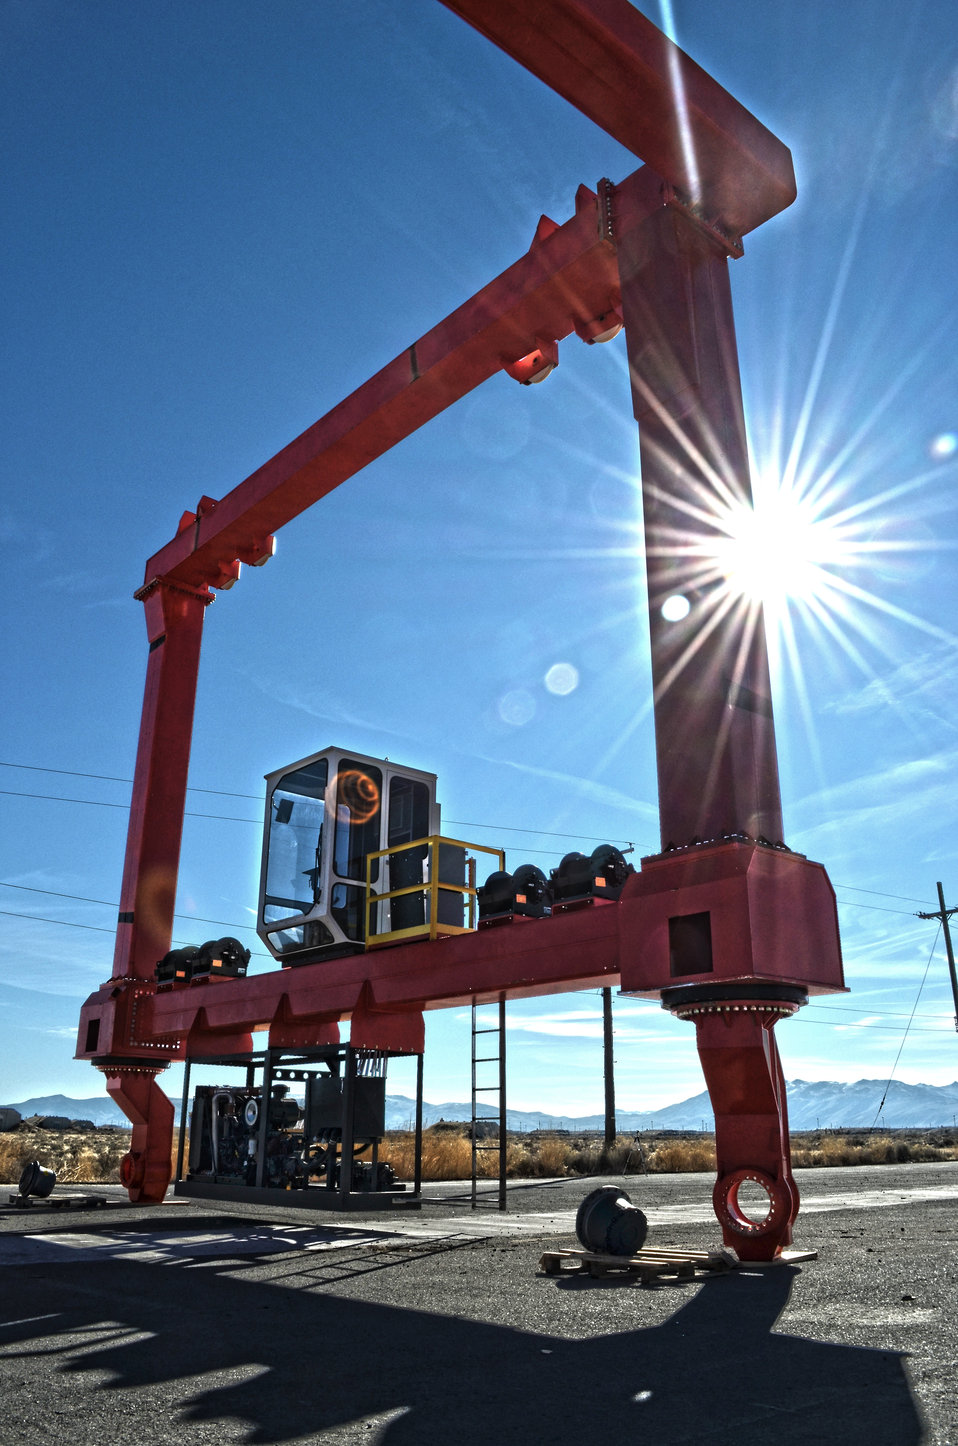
100-ton crane at Sierra Army Depot

A 100-ton gantry crane nears completion at Sierra Army Depot near Herlong, Calif., Feb. 6, 2012. The U.S. Army Corps of Engineers Sacramento District is overseeing the assembly of the crane, which the depot will use to unload military vehicles from railcars once complete. Completion is scheduled for late February. (U.S. Army photo illustration by Carlos J. Lazo/Released)